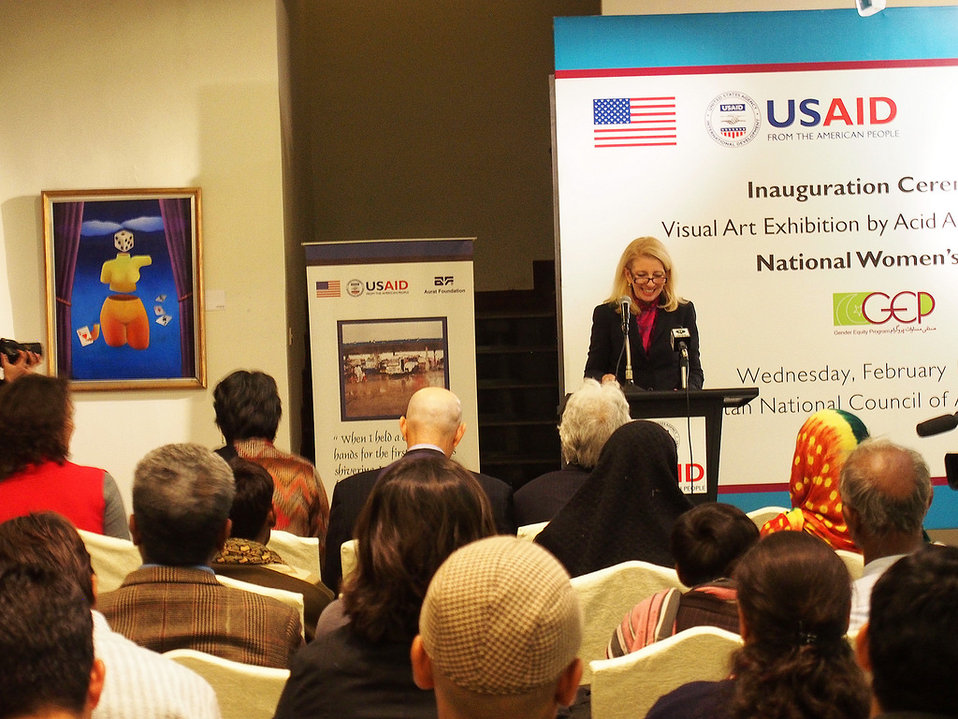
12481349415 2fbcbaa010 b

Catherine Russell, U.S. Ambassador-at-Large for Global Women's Issues, speaks at the opening of a photo exhibition featuring the works of acid attack survivors at Pakistan National Council of the Arts in Islamabad February 12, 2014.

The event was sponsored by USAID and its partner, the Aurat Foundation, which implements the Gender Equity Program (GEP), a program focused on addressing women’s access to justice. The photographers are beneficiaries of the Acid Survivors Foundation (ASF), a GEP grantee.